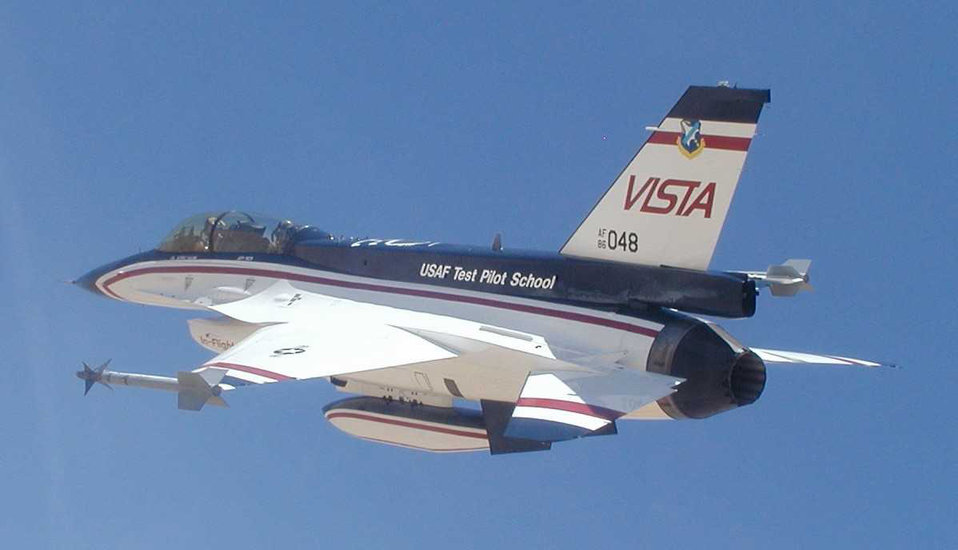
VISTA F-16 will test airborne safety system

EDWARDS AIR FORCE BASE, Calif. -- The U.S. Air Force Test Pilot School's Variable-stability, In-flight Simulation and Test Aircraft F-16 flies over Edwards Air Force Base, Calif. The VISTA is key to the school's flight testing of the Automatic Air Collision Avoidance System, known as Auto ACAS, scheduled to begin in March. The test program is aiming to prove the system's ability to see and avoid aircraft on an airborne collision course.